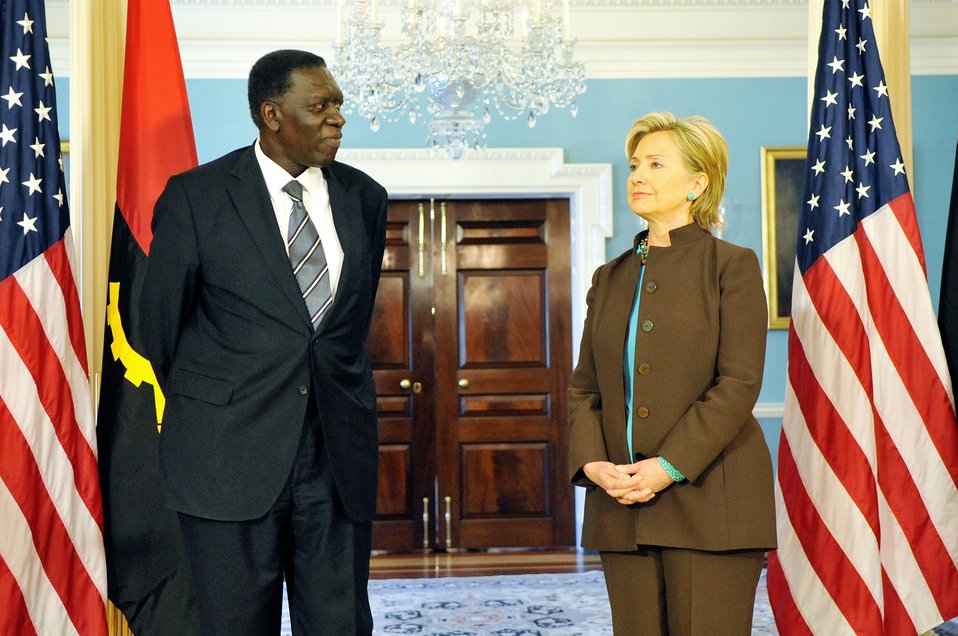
Secretary Clinton Meets With Angolan Minister of External Affairs

U.S. Secretary of State Hillary Rodham Clinton hosts a bilateral meeting with Angolan Minister of External Affairs Ansuncao Afonso dos Anjos in the Treaty Room of the U.S. Department of State in Washington, DC May 21, 2009.